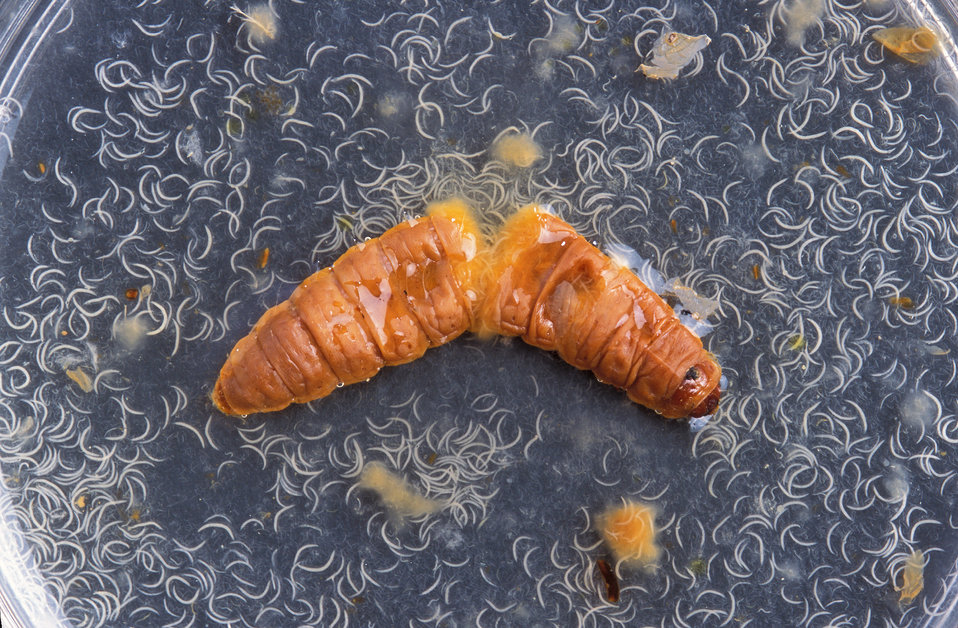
Inside one of these plump wax moth cadavers are thousands of wiggly nematodes, ready to serve as biocontrols against soil-dwelling crop pests. The cadavers can be placed in orchard or greenhouse soil, and the nematodes will emerge to protect crops from pests such as citrus root and black vine weevils.